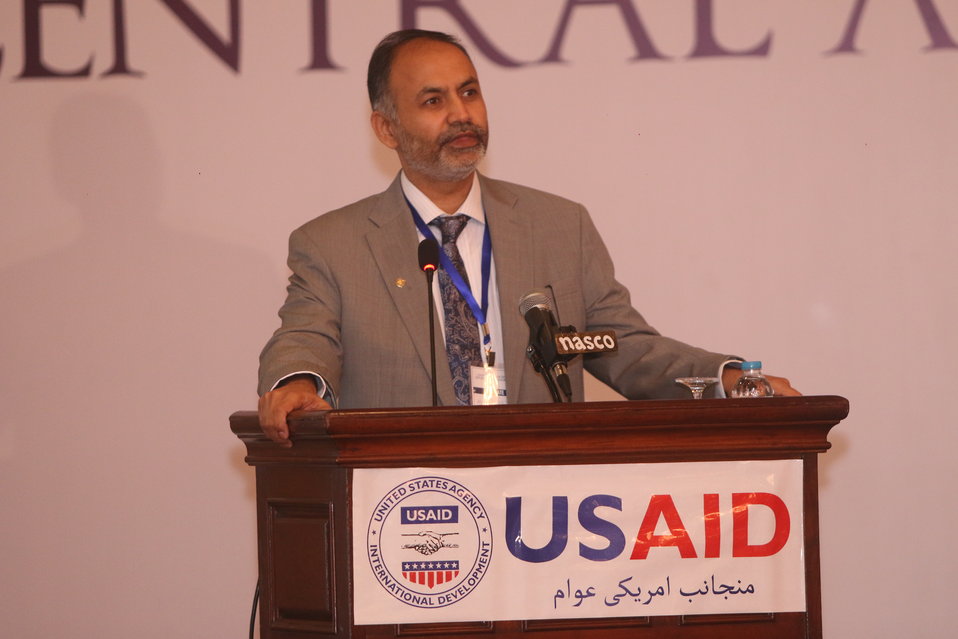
CABOC 2014